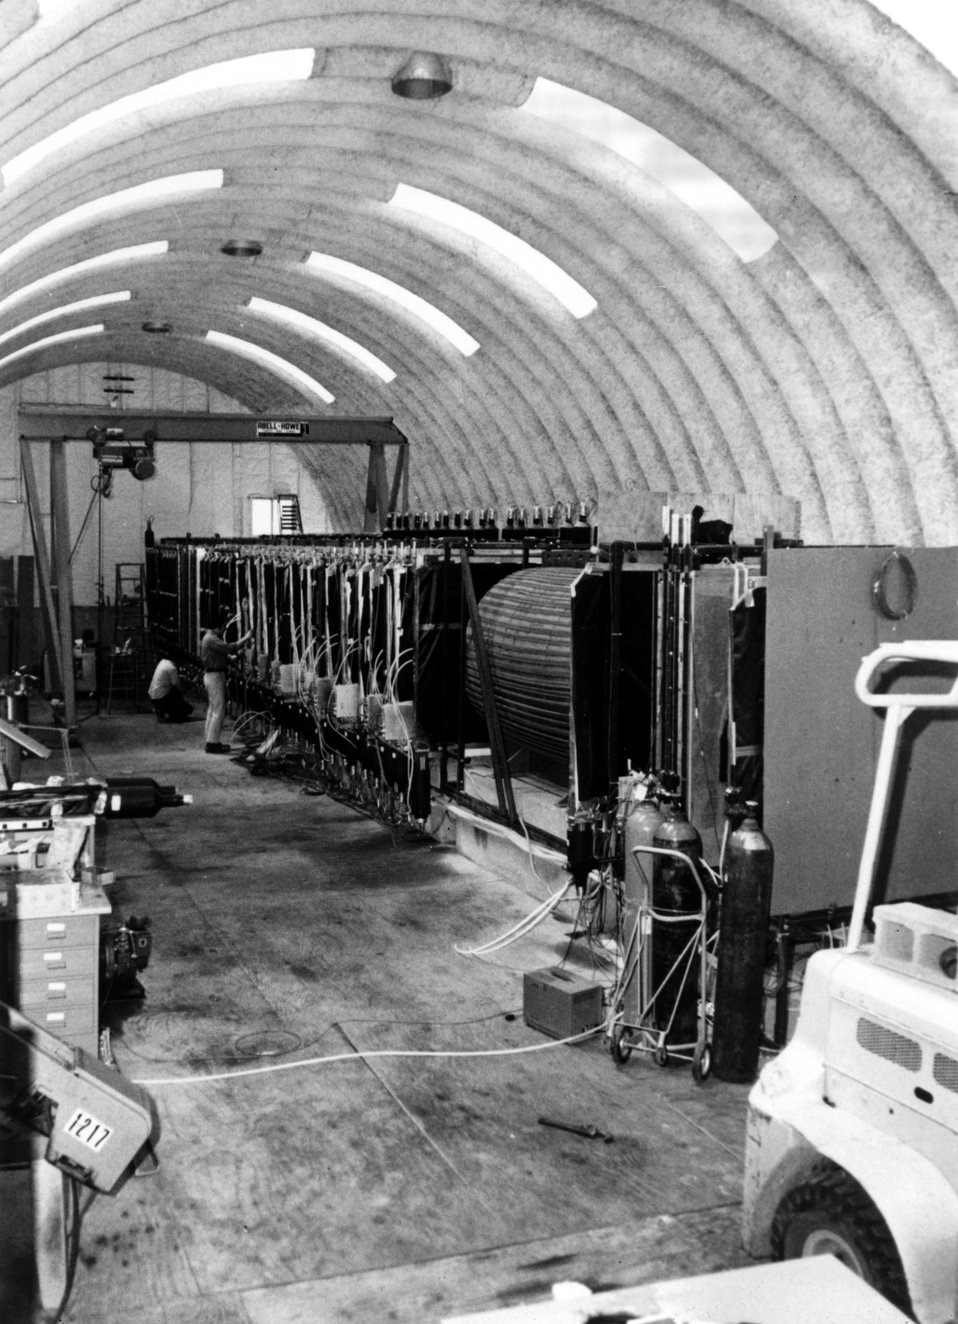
One of the neutron experiments installed at the AEC NAL. c.1974